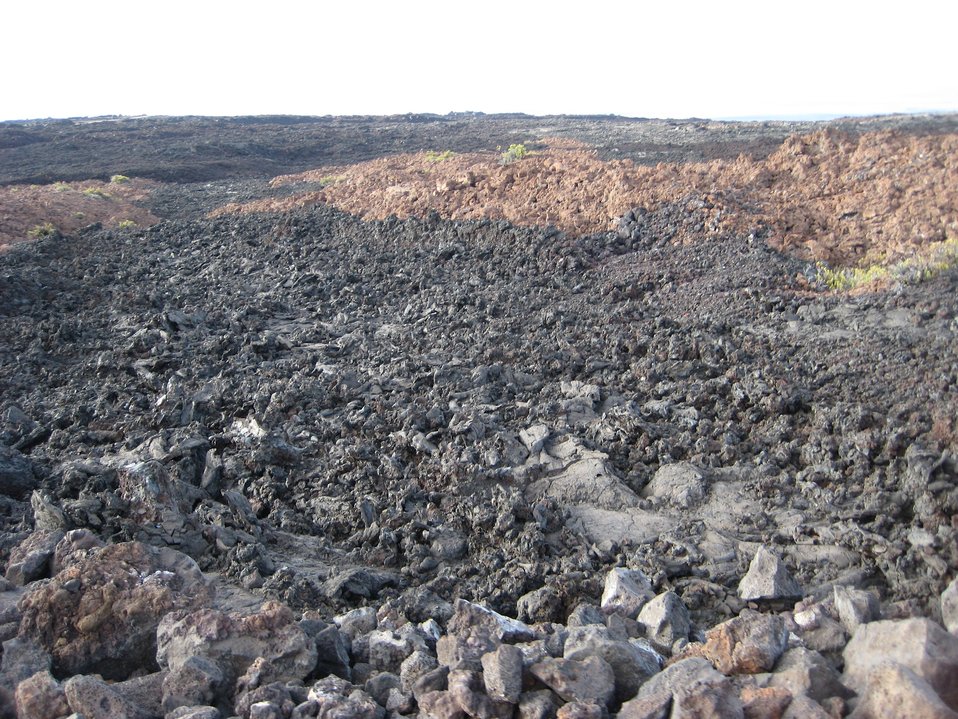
Contrasting colors of aa lava flows